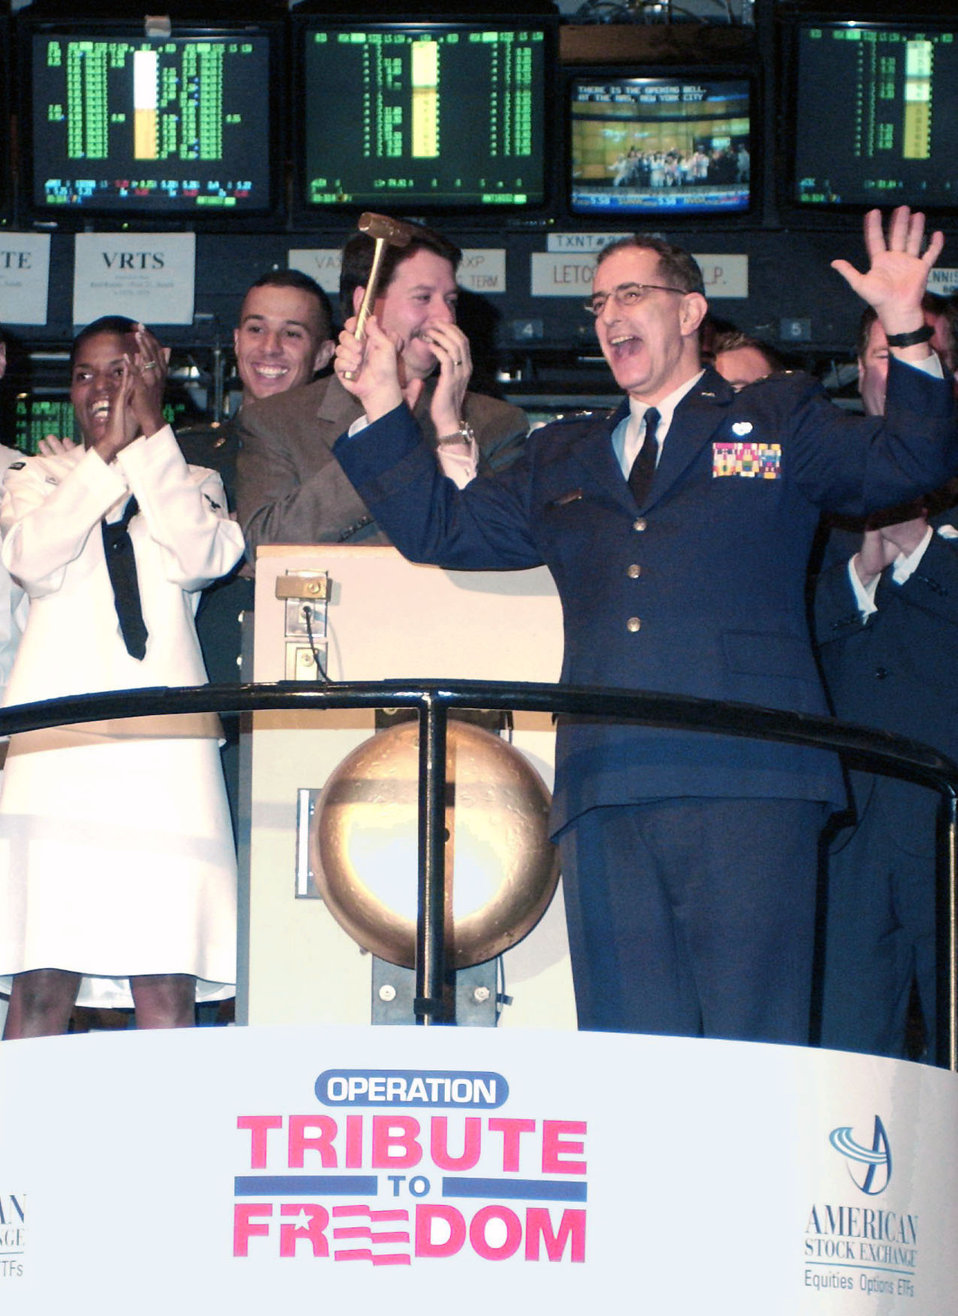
The exchange is now open

NEW YORK (AFPN) -- Maj. Gen. Robert Gruber of the New York Air National Guard cheers after ringing the bell to open the American Stock Exchange on June 13. One enlisted member from all the services also attended to represent the enlisted soldiers, airmen, Marines, sailors and Coast Guardsmen involved in operations Iraqi and Enduring Freedom.